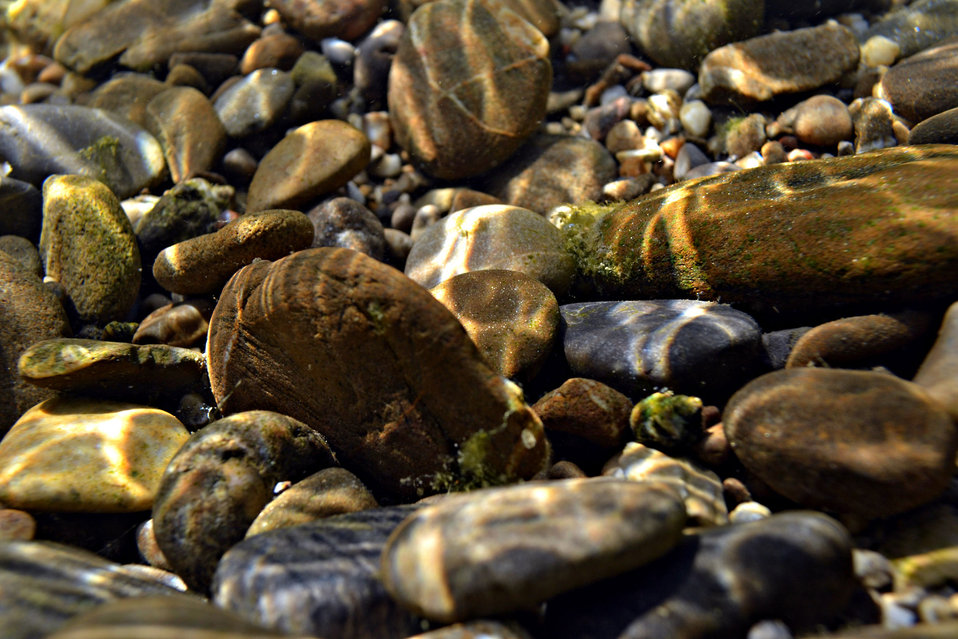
Stones under water

Colorful pebbles under water..